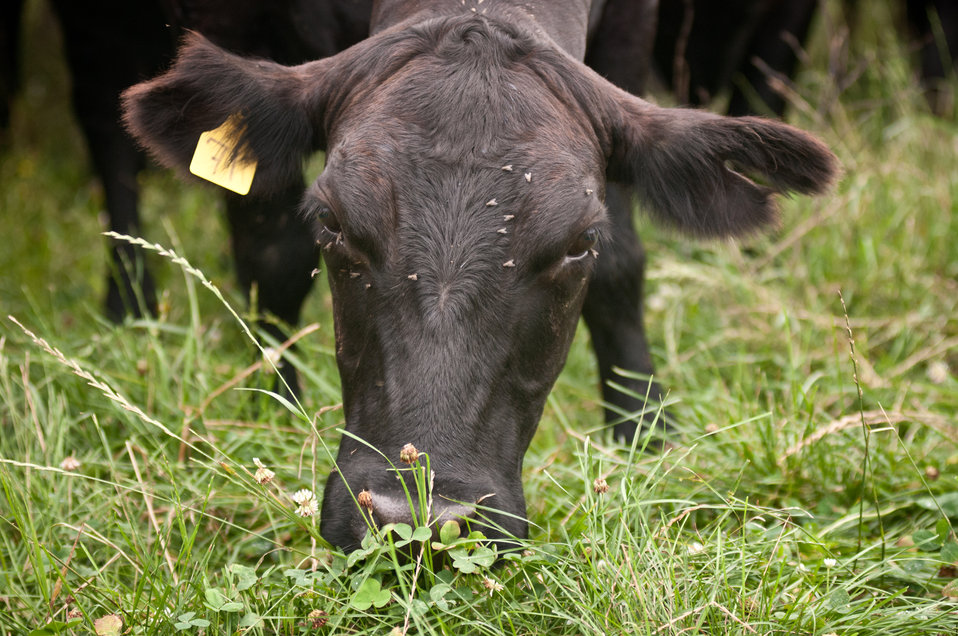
Black Angus cows and calves graze organic pastures, and for added nutrition and variety, they enjoy a daily feeding of sweet silage at Nick’s Organic Farm, owned by Nick Maravell, in Adamstown, MD on Friday, July 12, 2013. The white plastic wrapped bales of pasture grass and alfalfa have been fermenting for months to create sweet silage that stores well and can be used to feed cattle at varying amount all year long. The fermentation process sweetens the taste and increases the vitamin levels. The farm produces Black Angus beef, chicken, turkey, eggs, hay, soybeans, corn, alfalfa, orchard grass, rye; and other crops. The cattle are 100% grass-fed receiving certified organic pasture, certified organic hay (in winter), water and mineral salts mixed with sea kelp. The cattle are not fed hormones, antibiotics or animal products. Poultry feed from grain is ground from organic grain. The poultry also graze on organic pastures. The farm has conducted on-farm research with federal, state and non-profit agencies to refine organic practices. An organization such as the U.S. Department of Agriculture (USDA) Agricultural Research Service (ARS) center in Beltsville has been able to conduct research to improve organic crops and to breed and manage the cattle so that they have.